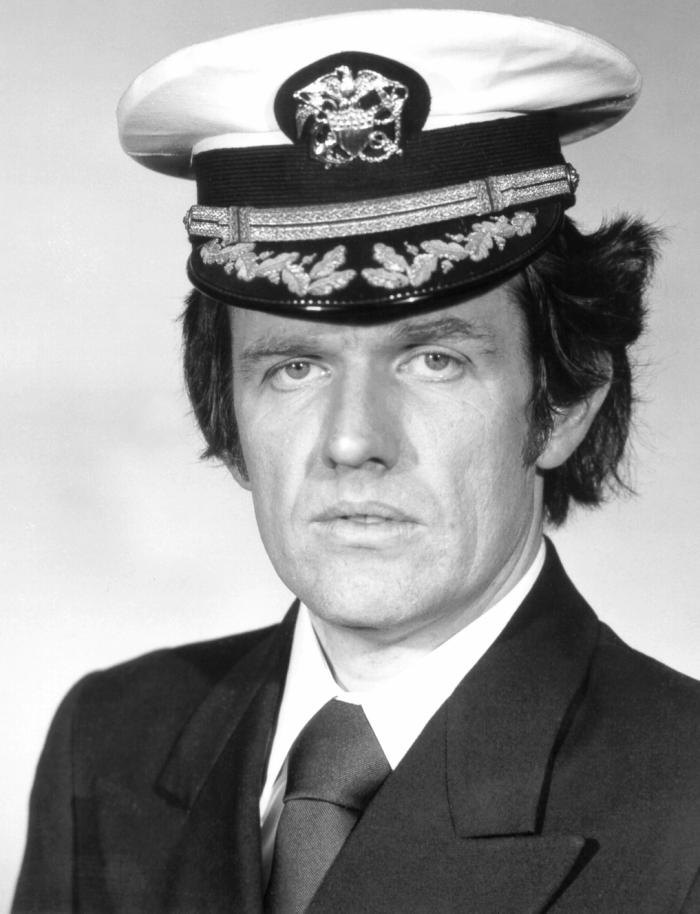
This is a 1970's photograph of Dr. David Fraser, former Chief of the Special Pathogens Branch of the CDC from 1975 - 1980.